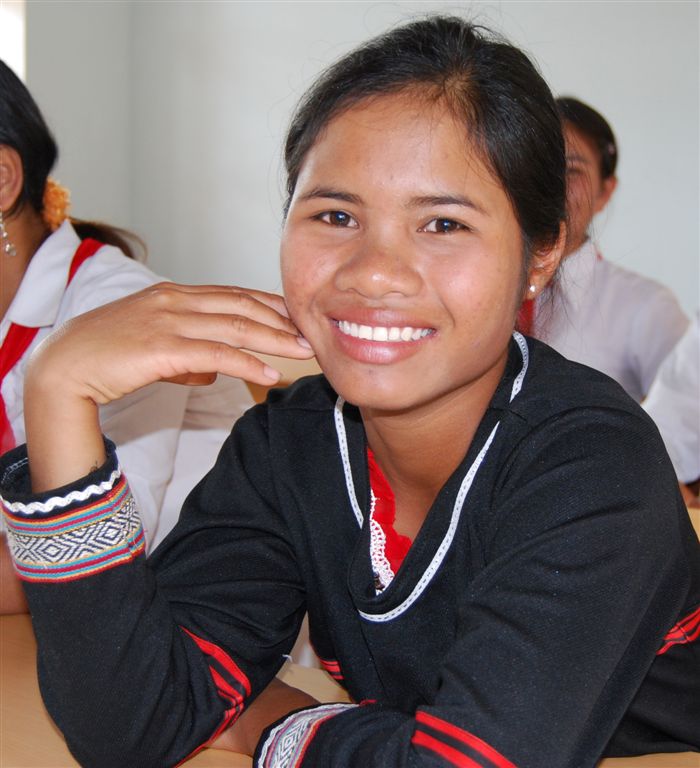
Student Y Nga at Kon Ray School